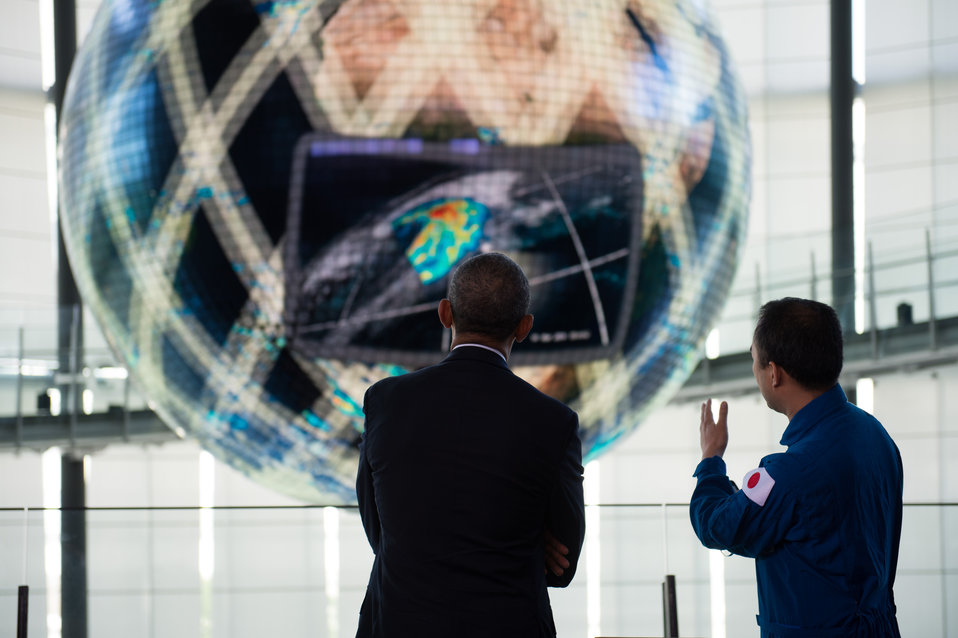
President Obama Views Miraikan Exhibit with Japanese Astronaut

U.S. President Barack Obama, with Japanese astronaut Soichi Noguchi, watches a demonstration on the Geo-Cosmos, a suspended globe that visualizes environmental data about the earth, during his visit to the Miraikan (the National Museum of Emerging Science and Innovation) in Tokyo, Japan, on April 24, 2014.